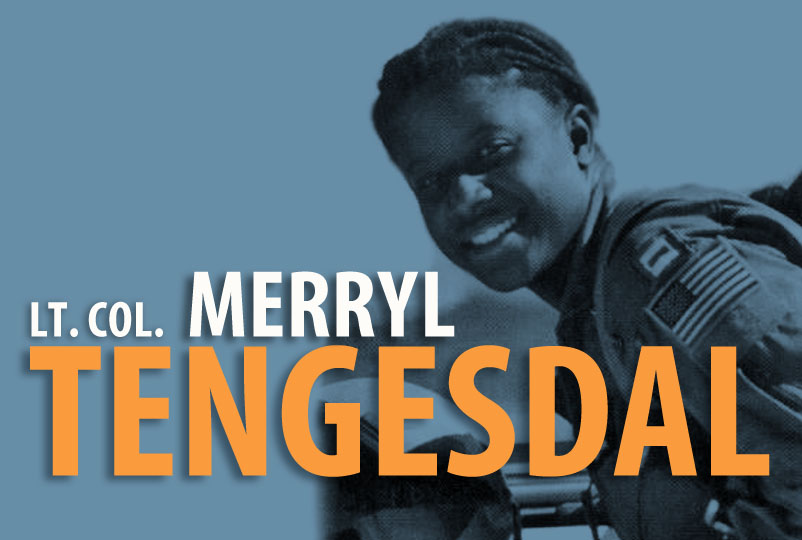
Lt. Col. Merryl Tengesdal